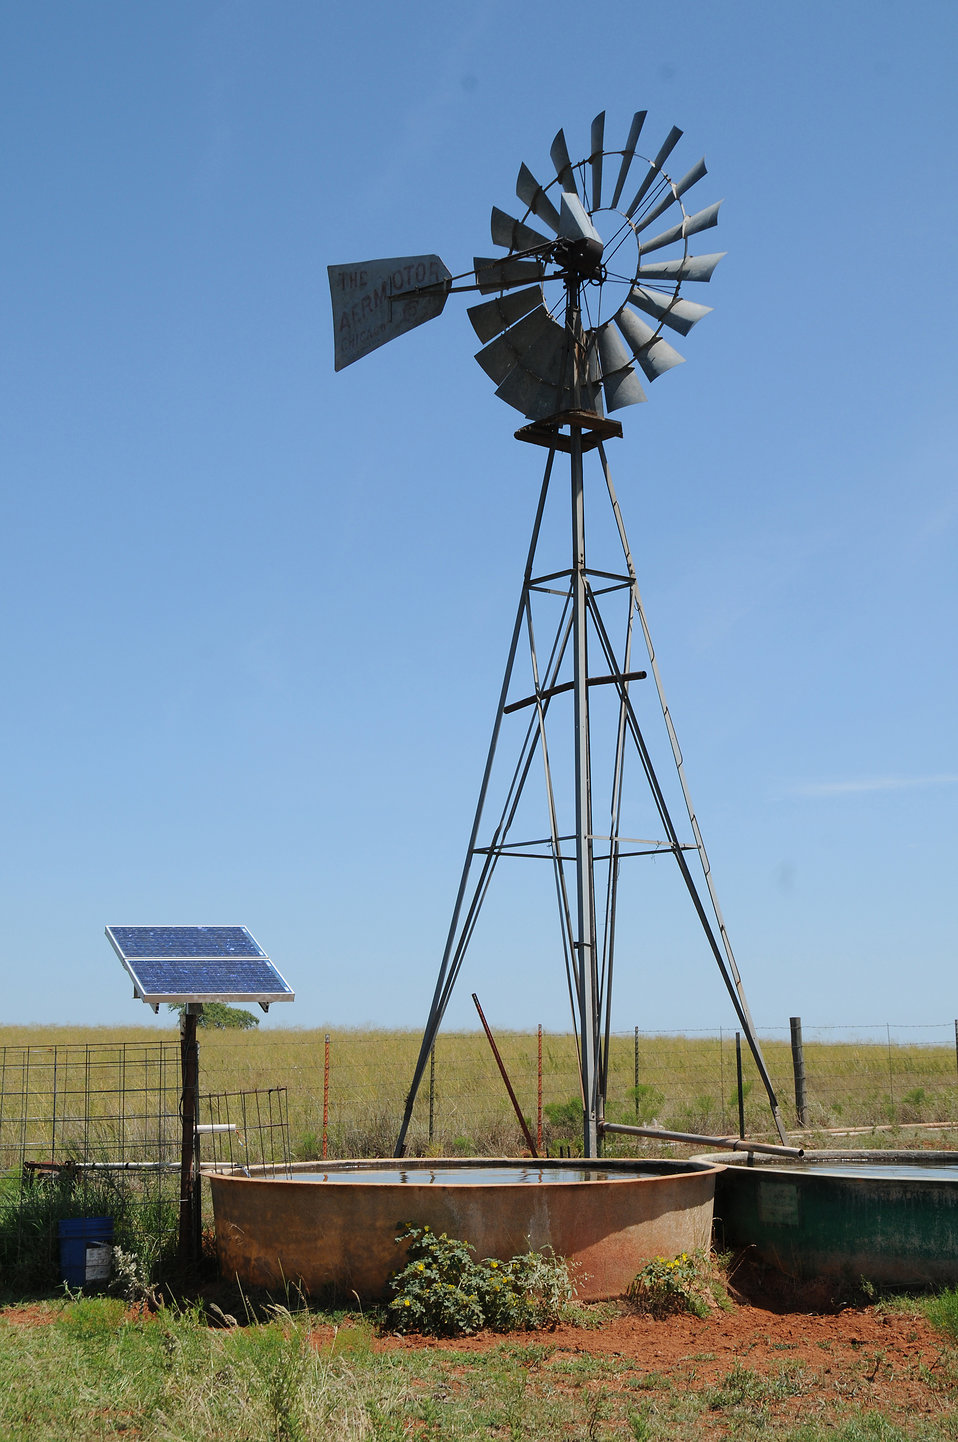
Wind-powered turbine and solar power keep water troughs full for cattle in an Oklahoma field on August 13, 2009.